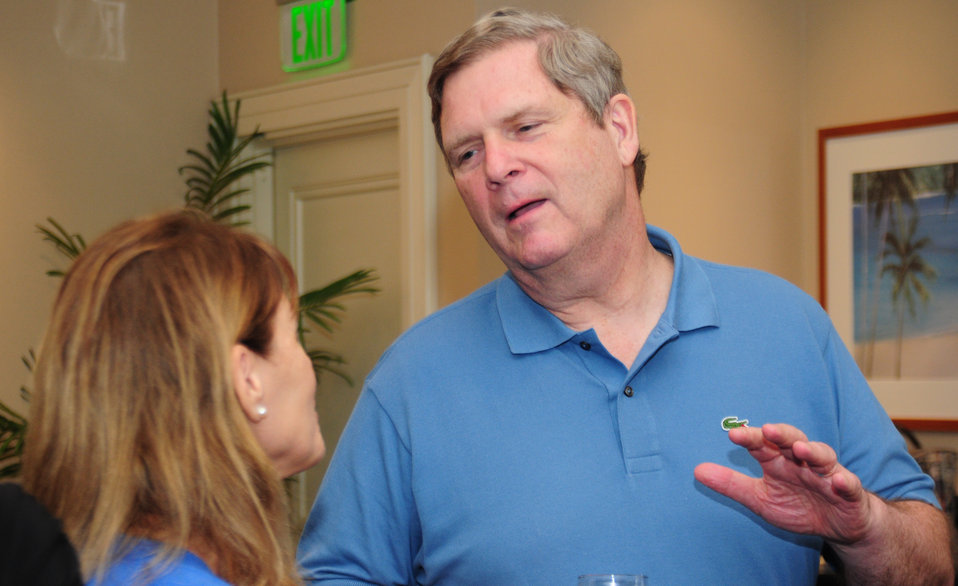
Agriculture Secretary Tom Vilsack talks with California Farm Bureau members at the Hilton Hawaiian Village, in Waikiki, Hawaii, on Sunday, January 8, 2012.